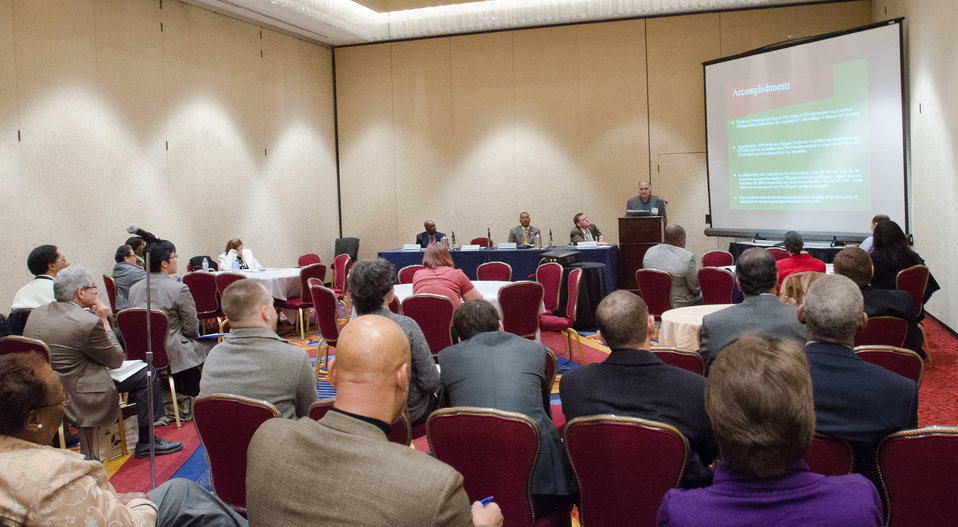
Texas/Mexico Border Coalition Chairman Omar Garza speaks about Identification of the Risks Faced By, the Needs of, and the Role of Non-governmental Organizations (NGOs) to Small and Disadvantaged Farmers, during the U.S. Department of Agriculture (USDA) 2013 Agricultural Outlook Forum held at the Crystal Gateway Marriott Hotel in Arlington, VA on Friday, Feb. 22, 2013. The breakout session’s general topic of Risk Management for Small and Socially Disadvantaged Farmers provides a profile of small and disadvantaged farmers based on information from the recent Census of Agriculture in order to identify the size and current economic and demographic trends of these farmers. The discussion also identified the risks for these farmers, the need to manage those risks for longer-term viability/sustainability, the role of the public sector, and the resources available for small and disadvantaged farmers in coping with risk.